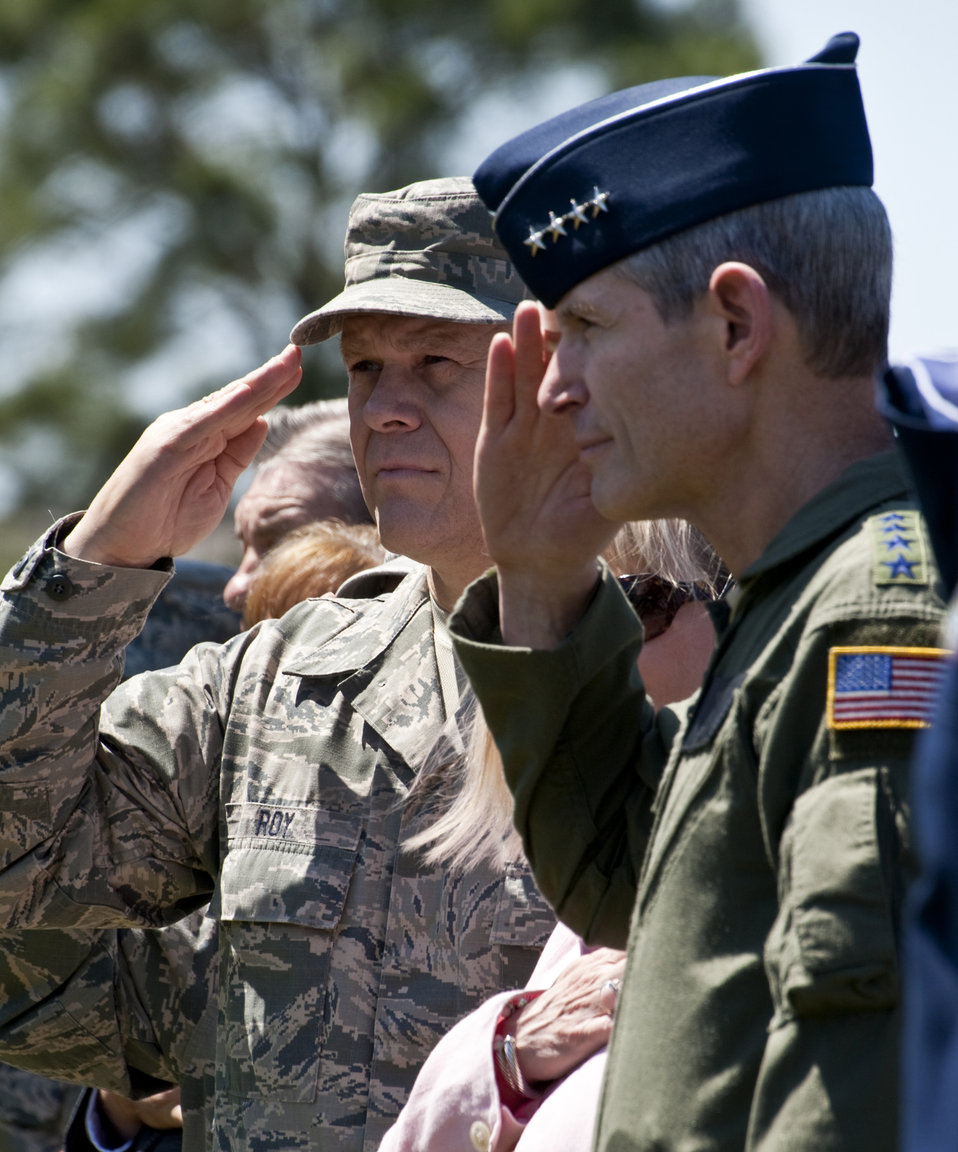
Wild Thing

Air Force Chief of Staff Gen. Norton Schwartz and Chief Master Sgt. of the Air Force James A. Roy salute the colors during the national anthem at an MC-130E Combat Talon dedication ceremony May 6, 2011, at Hurlburt Field, Fla. Chief Roy and General Schwartz, a former wing commander and Talon pilot at Hurlburt Field, saw the aircraft honored in its final resting place at the base's airpark. The Talon, known as